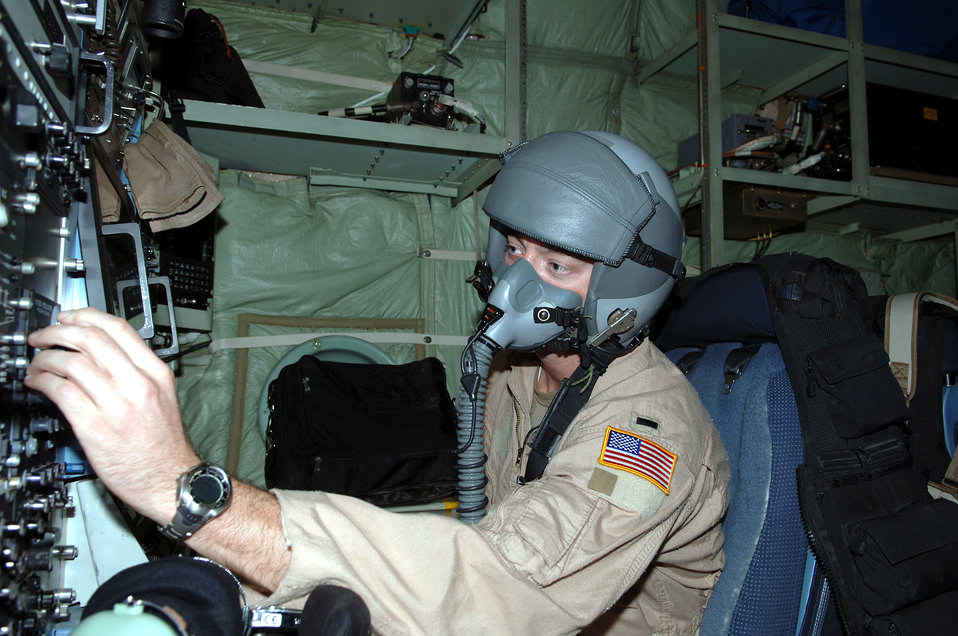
Airpower key to successful voting

BAGRAM AIR BASE, Afghanistan -- First Lt. Jeremy Smith conducts preflight checks on an EC-130H Compass Call aircraft before takeoff here to support Afghanistan's National Assembly elections Sept. 18. The aircraft, along with A-10 Thunderbolt IIs and U.S. Navy EA-6B Prowlers, have stepped up efforts throughout Afghanistan to deter enemy aggression and help ensure voter safety. Lieutenant Smith is deployed from Davis-Monthan Air Force Base, Ariz.